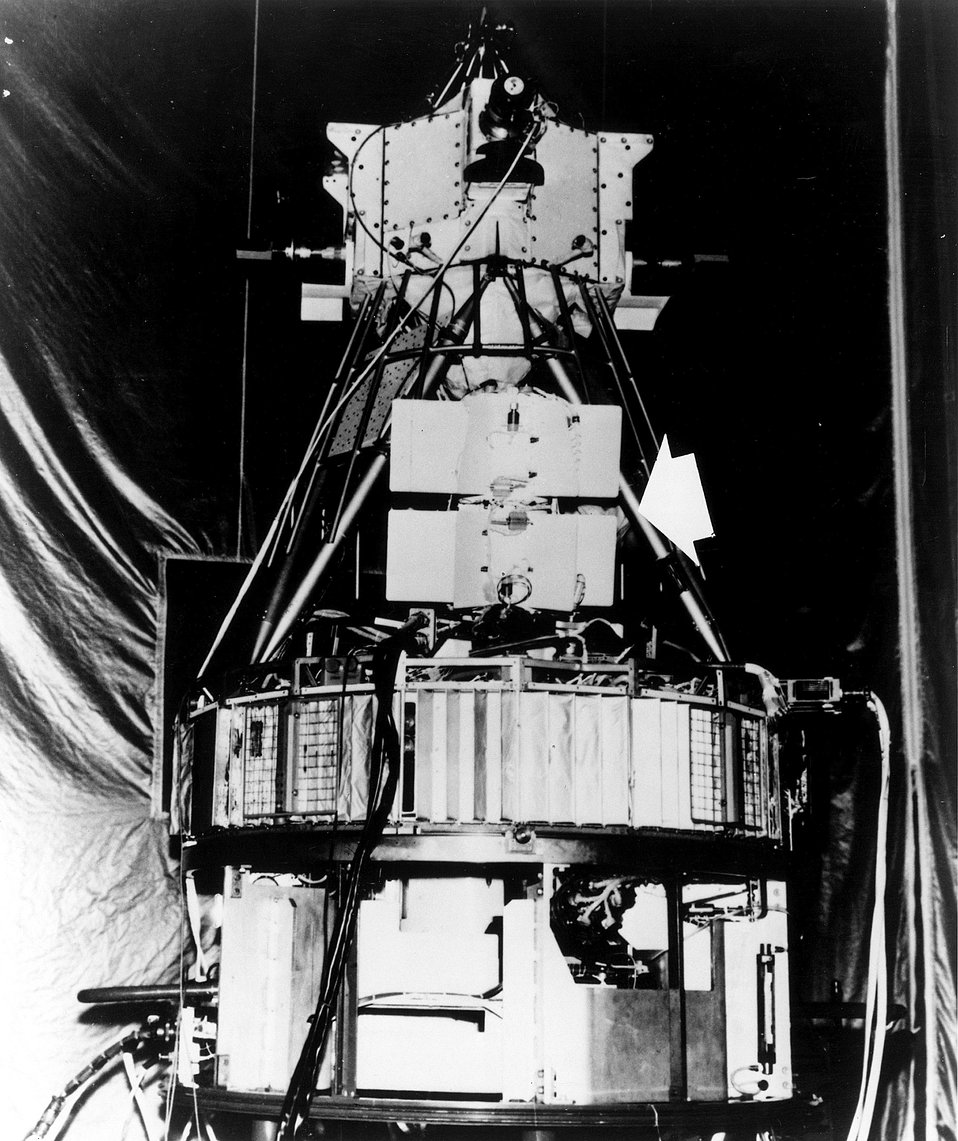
SNAP-19 Radioisotope Thermometric Generators (RTG), in orbit for about 2 years, are being modified for probing the planet Jupiter in deep outer space.